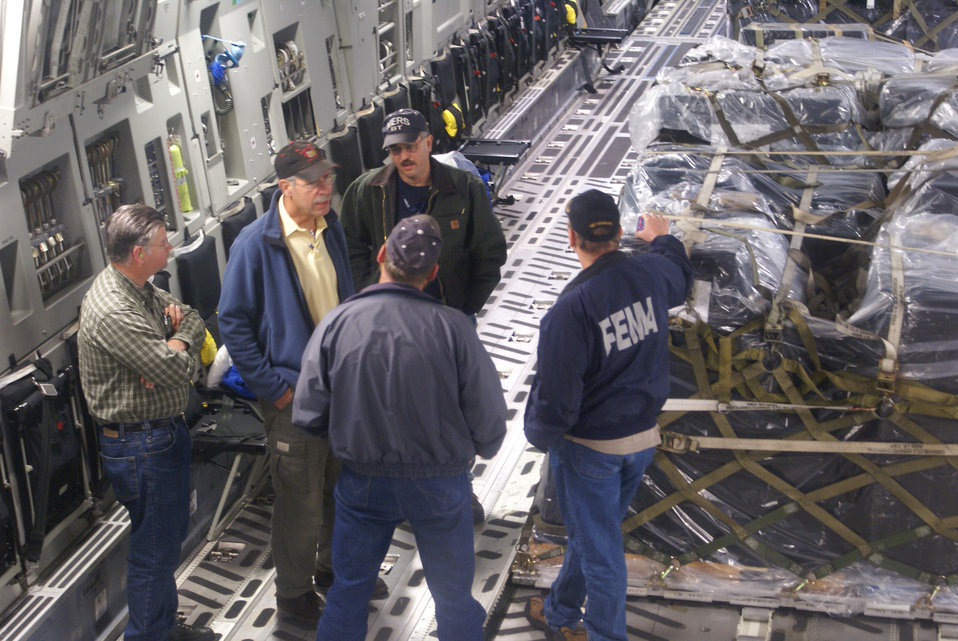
relief efforts

Federal Emergency Management Agency officials review their plans before departing a C-17 Globemaster III Oct. 1, 2009, in Pago Pago, American Samoa. The aircraft, from McChord Air Force Base, Wash., delivered the FEMA officials and 17,000 pounds of communications equipment. The mission was McChord's first airlift to the Samoan Islands in support of humanitarian relief efforts.